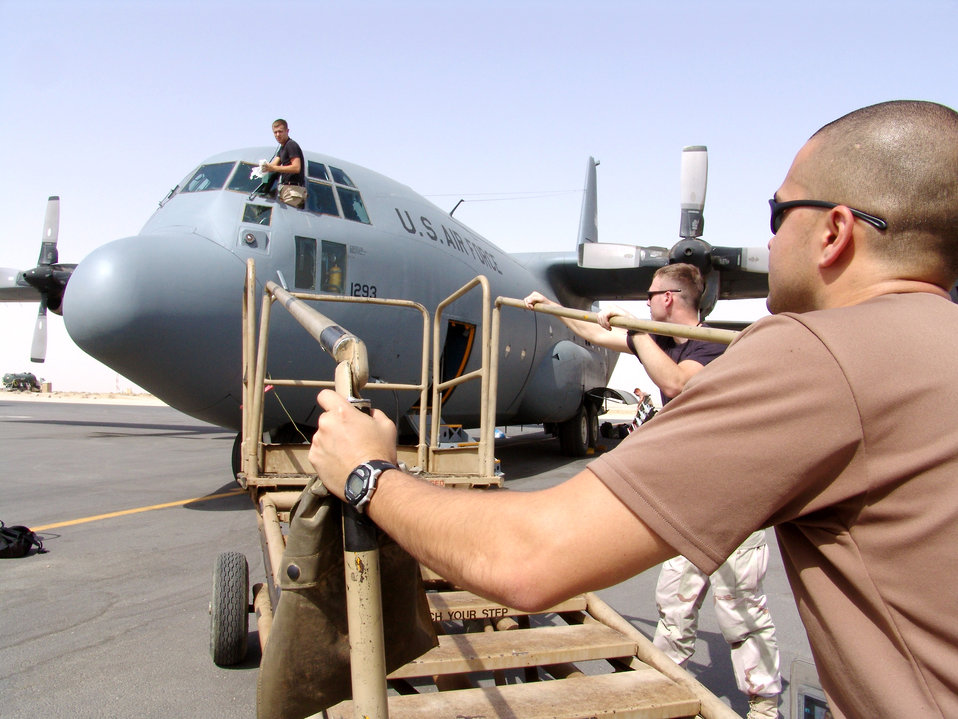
Ready for takeoff

SOUTHWEST ASIA -- Senior Airmen Fabian Balderrama (right) and Sam Kendall push an aircraft maintenance stand over to a C-130 Hercules to help Airman 1st Class Denton Lester clean the outer cockpit windows. The aircraft maintenance stand allows maintainers to service all areas of the aircraft. The Airmen are crew chiefs with the 386th Expeditionary Aircraft Maintenance Squadron at a forward-deployed location and are from Little Rock Air Force Base, Ark.